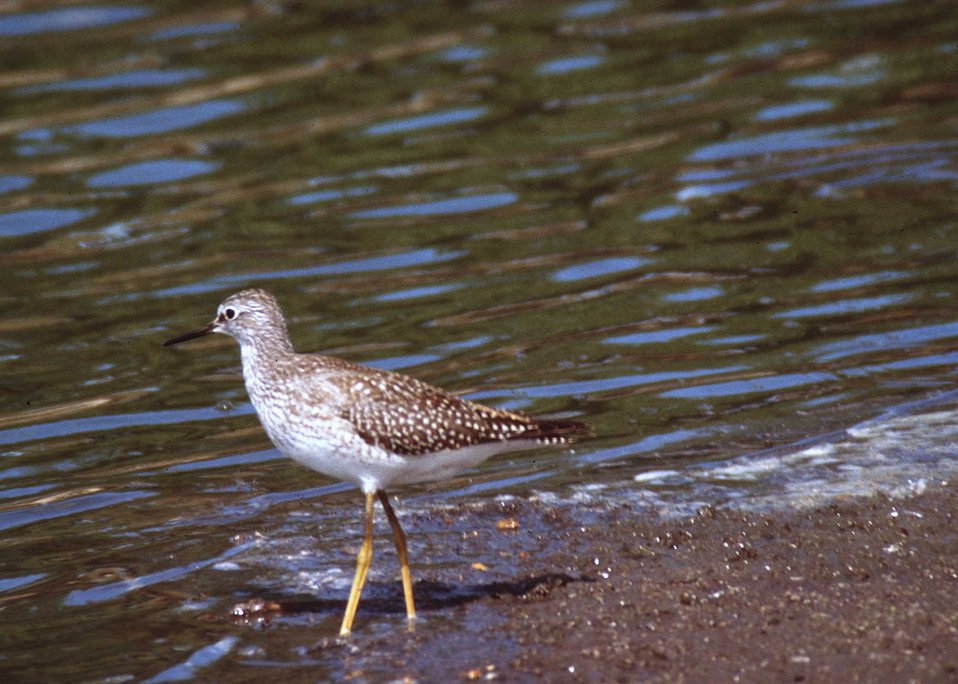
Lesser yellow legs along a shoreline in South Dakota.